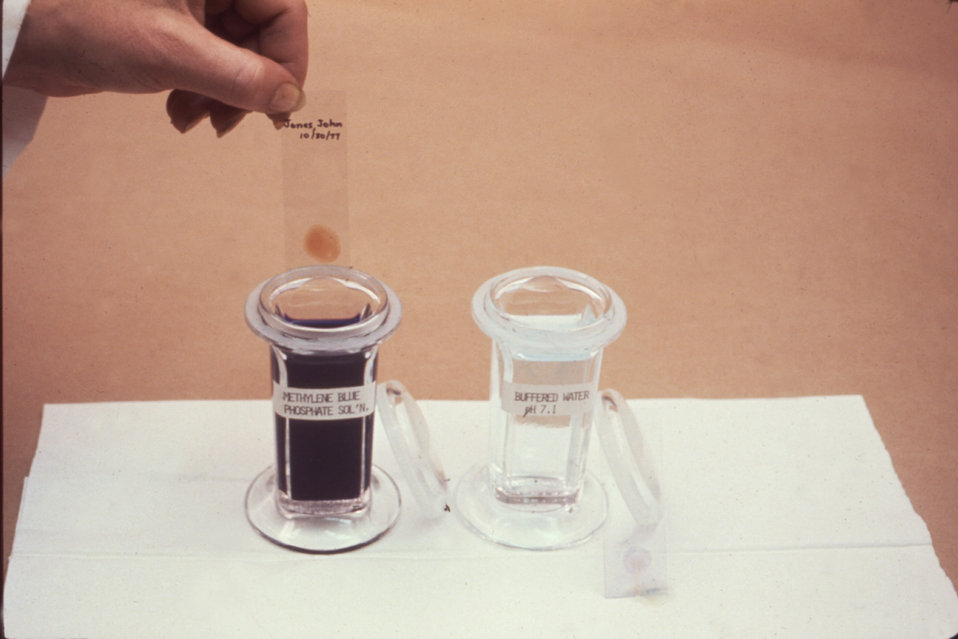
This laboratorian is treating thick blood films with a methylene-blue phosphate solution in a parasitology lab.